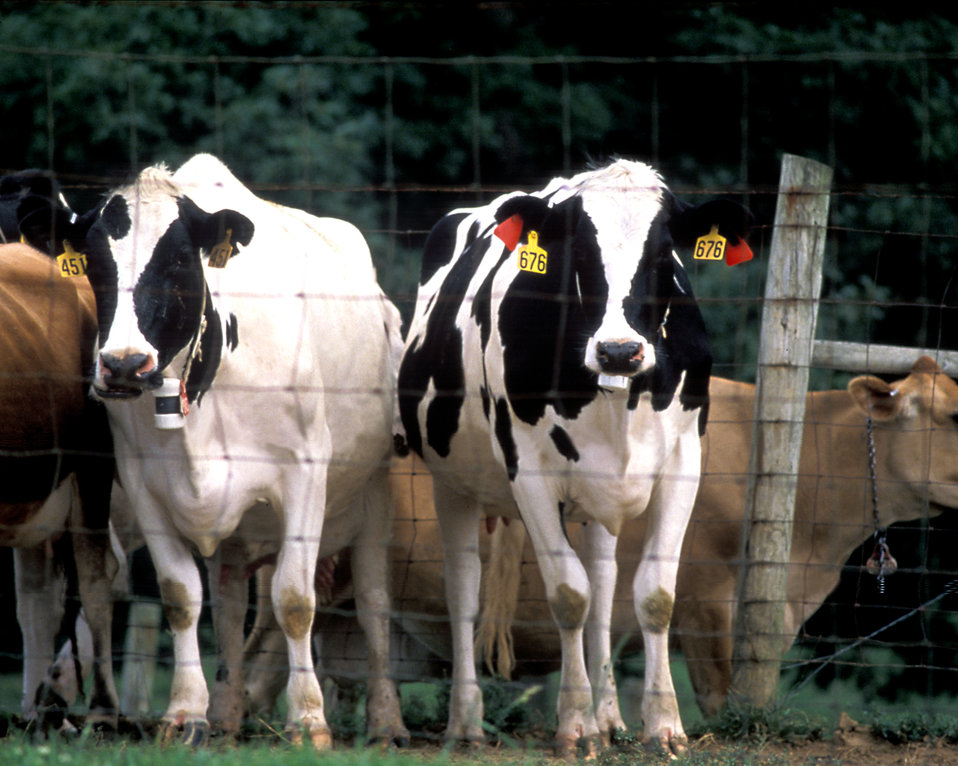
These are cattle which have been inspected by the Food Safety Inspection Service, (FSIS) prior to slaughter.